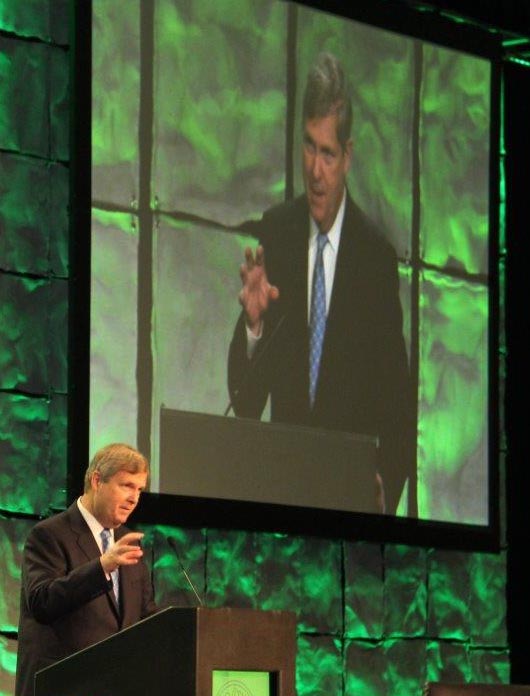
Agriculture Secretary Tom Vilsack speaks at the fifth annual executive leadership conference 'Taking it to the Streets' at the JW Marriott Desert Ridge Hotel in Phoenix, AZ on Feb. 27, 2014.